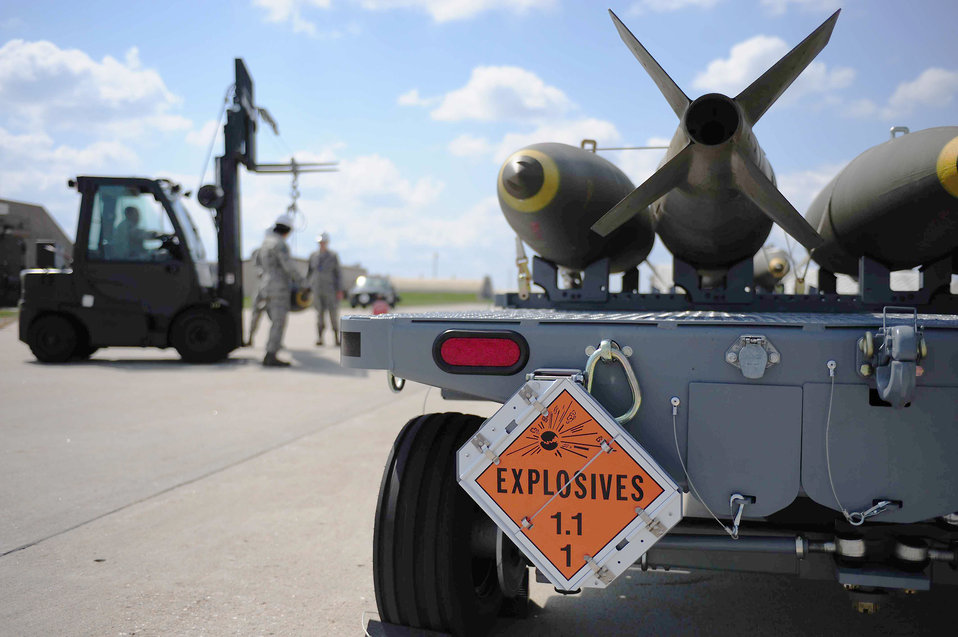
Warehousing the Mark 84 bomb

ELLSWORTH AIR FORCE BASE, S.D.- Munitions conventional maintenance crew members move a Mark 84 bomb, April 21. Mark 84's are listed as 1.1 explosives meaning they have a mass explosion hazard.